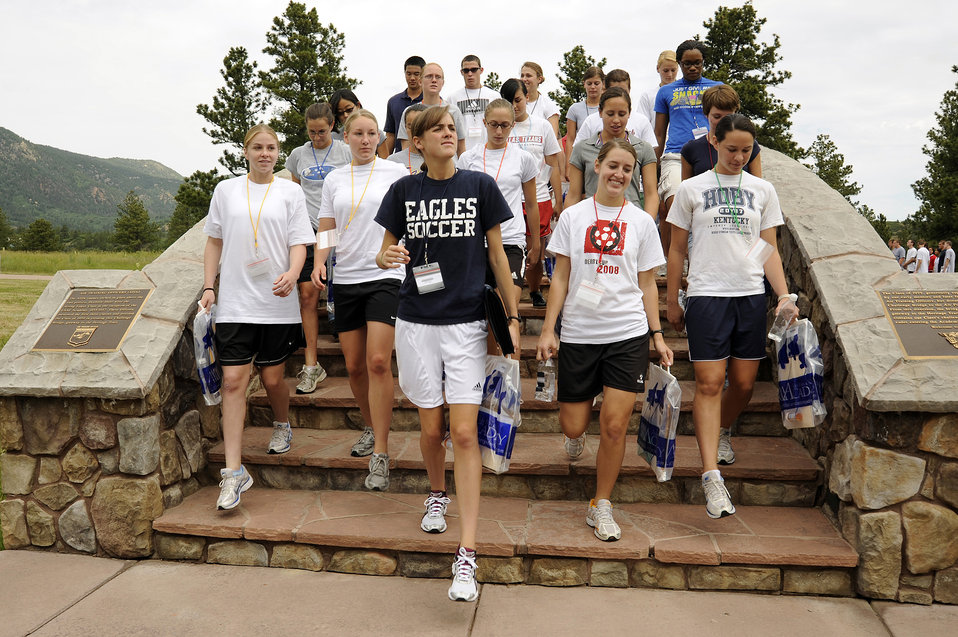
Academy Class of 2013 learns basics

Basic cadets take their first steps into their Air Force careers as they leave Doolittle Hall and cross over the Memorial Bridge during cadet inprocessing June 25 at the U.S. Air Force Academy in Colorado Springs, Colo.